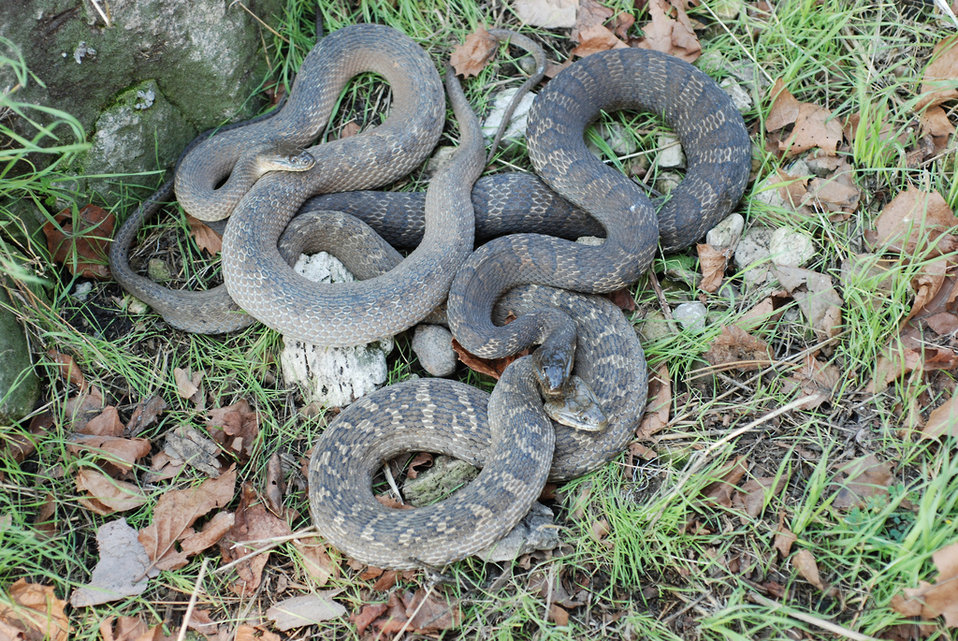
Recovered Lake Erie watersnake (Nerodia sipedon insularum)